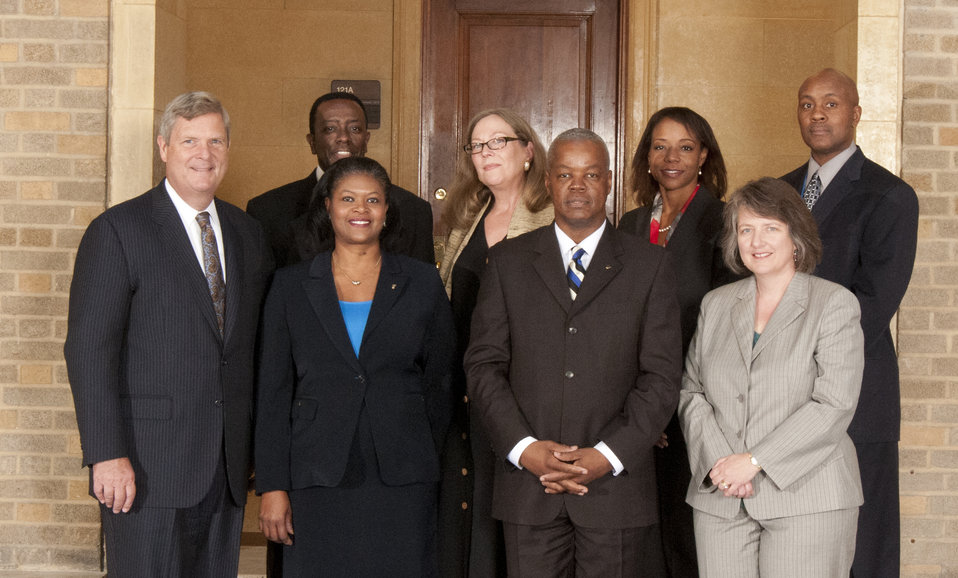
Agriculture Secretary Tom Vilsack and Deputy Agriculture Secretary Kathleen Merrigan with Honor Award Group Information Technology Steering Committee Administration Solutions Project, Office of the Chief Information Officer (OCIO) on the patio of the U.S. Department of Agriculture in Washington, D.C. on Wednesday, Sept. 12, 2012. The Information Technology Steering Committee achieved the first major information technology milestone in the Strengthening Service Administrative Solutions Project.